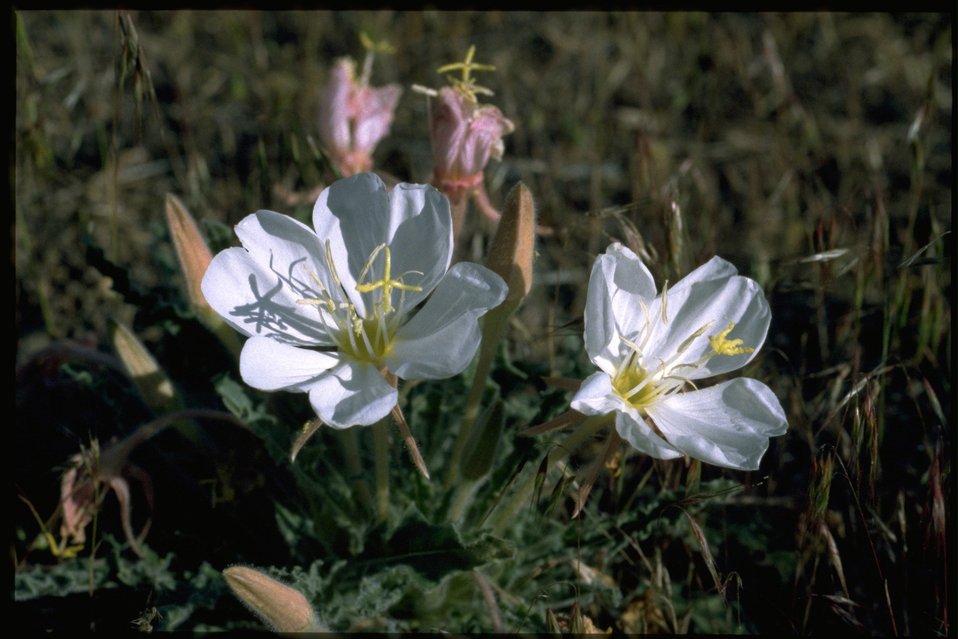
Medium shot of Oenothera.